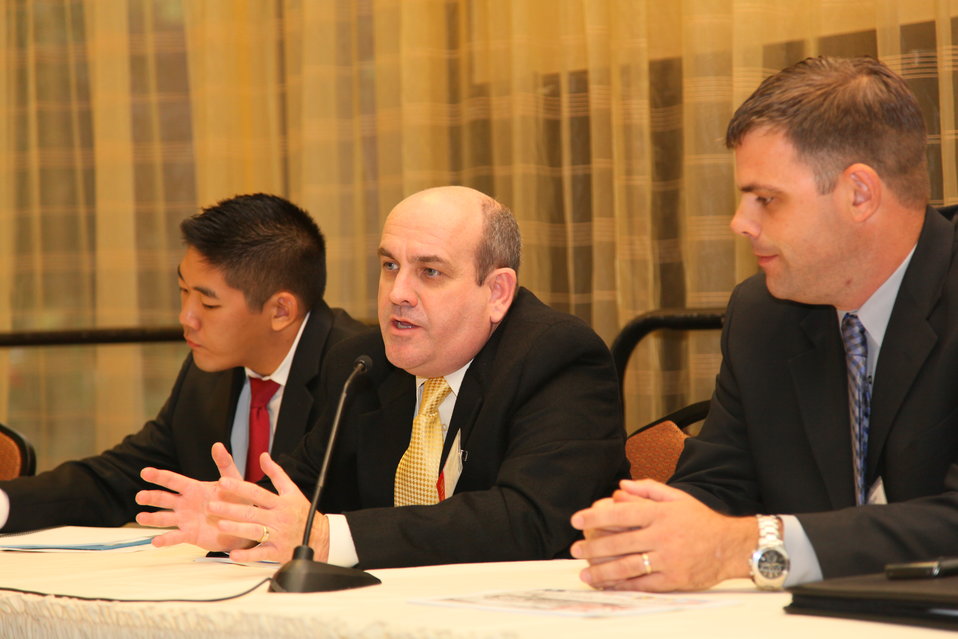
Water conference offers solutions for managing California’s complex water issues

Project manager Mark Ellis (center), with the U.S. Army Corps of Engineers Sacramento District, speaks about the collaboration between federal, state and local sponsors of the Marysville ring levee construction project during the Society of American Military Engineers’ Water Conference in Sacramento, Calif., Oct. 5, 2011. Mathew Pi (left), with the California Department of Water Resources, and Tom Engler, of MBK Engineers, joined Ellis in a panel discussion at the conference, which served as a venue for exchanging ideas and forming partnerships for dealing with complex California water issues ranging from water quality to unpredictable flooding events.